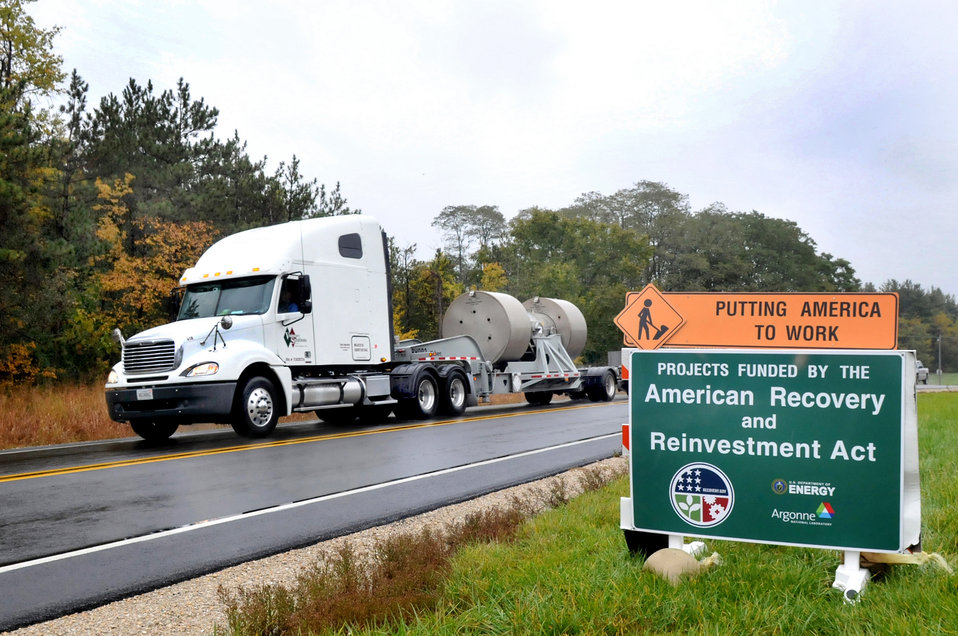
Argonne Recovery Act Workers Remove Waste, Demolish Cold War Legacy Buildings